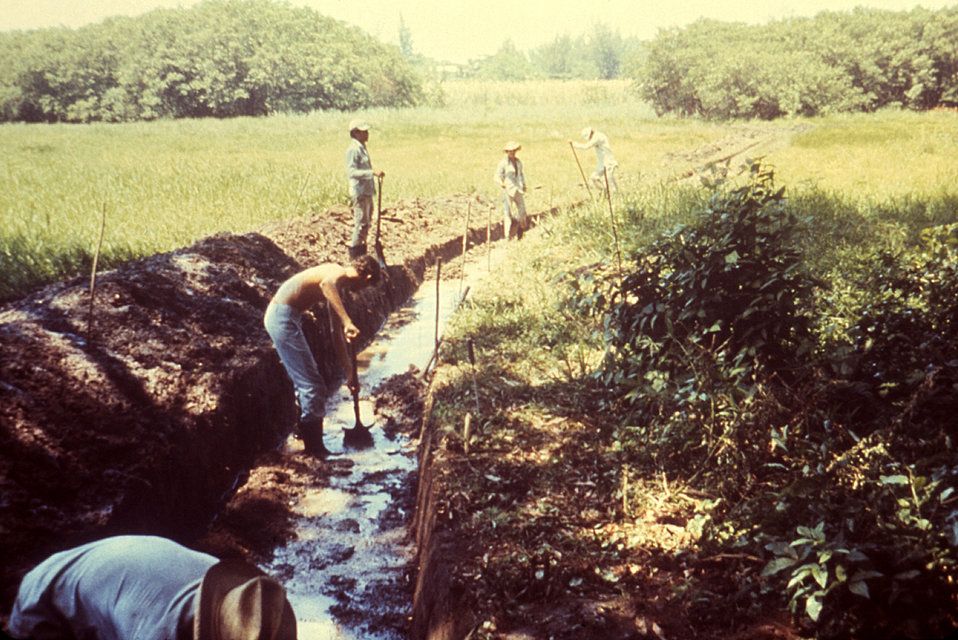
At the time of this photograph, this drainage canal was undergoing reconstruction in order to provide a permanent waterway promoting the free-flow of water through a malaria-prone region.